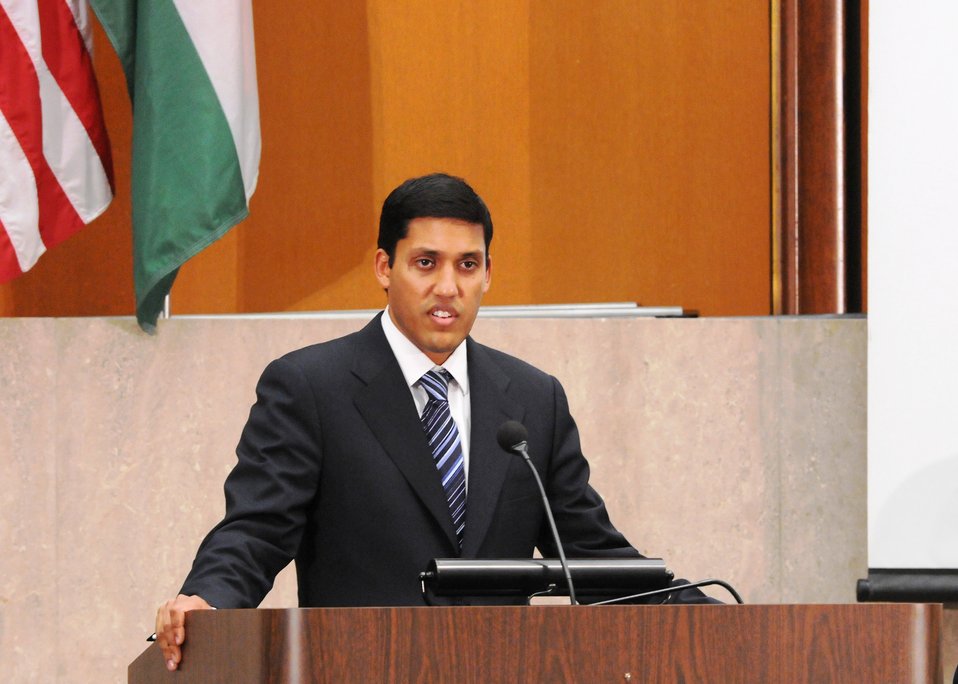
USAID Administrator Shah Delivers the Keynote Address

USAID Administrator Dr. Rajiv Shah delivers keynote address at the U.S.-India People to People Conference held at the U.S. Department of State in Washington, D.C., on October 28, 2010.